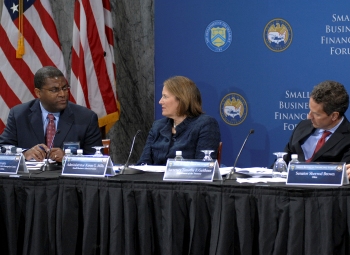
Treasury and SBA Host a Small Business Financing Forum

Bill Bynum of the CDFI Advisory Board and Enterprise Corporation of the Delta shared his story with Secretary Geithner and Administrator Mills.